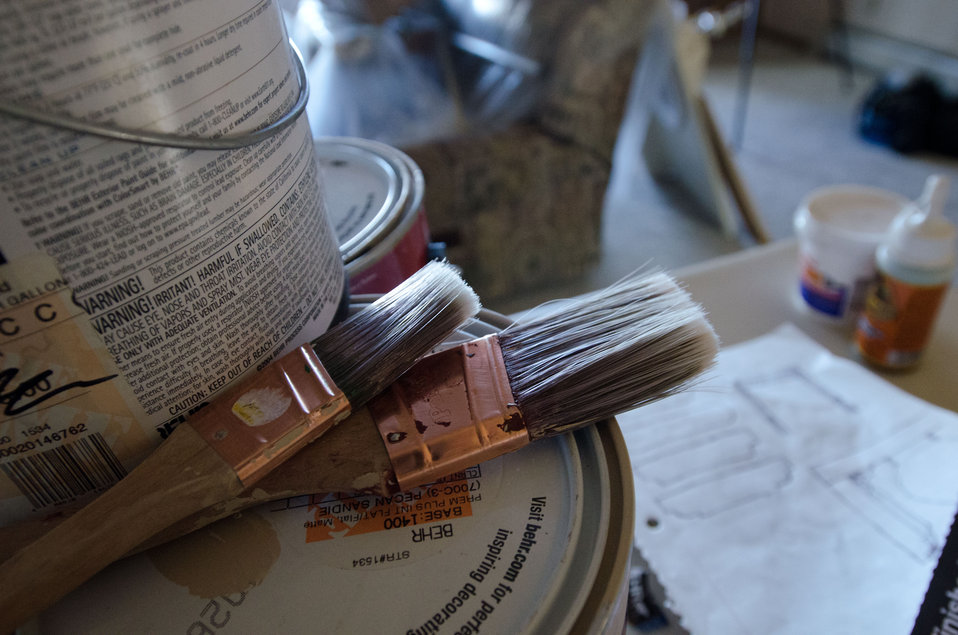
Colorado native and business owner Bruce Longwell’s paint supplies and home tools at his Durango, CO home on July 17, 2012. Mr. Longwell financed the single-family house with a U.S. Department of Agriculture (USDA) Rural Development (RD) Housing Assistance loan. This provided lower monthly payments than his prior rental home. Homeownership provides potential gains through home equity.